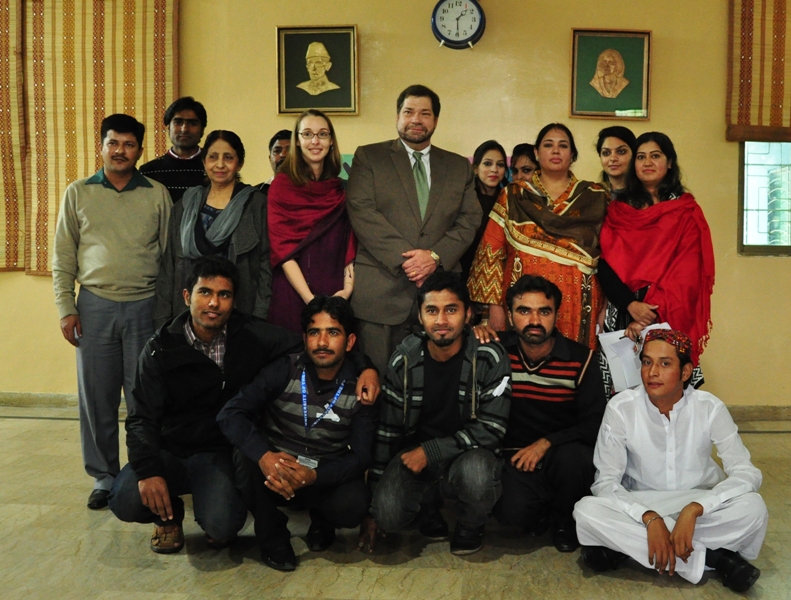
Mission Director for Punjab Jeffrey Bakken with students of Gender Studies Department of Punjab University.